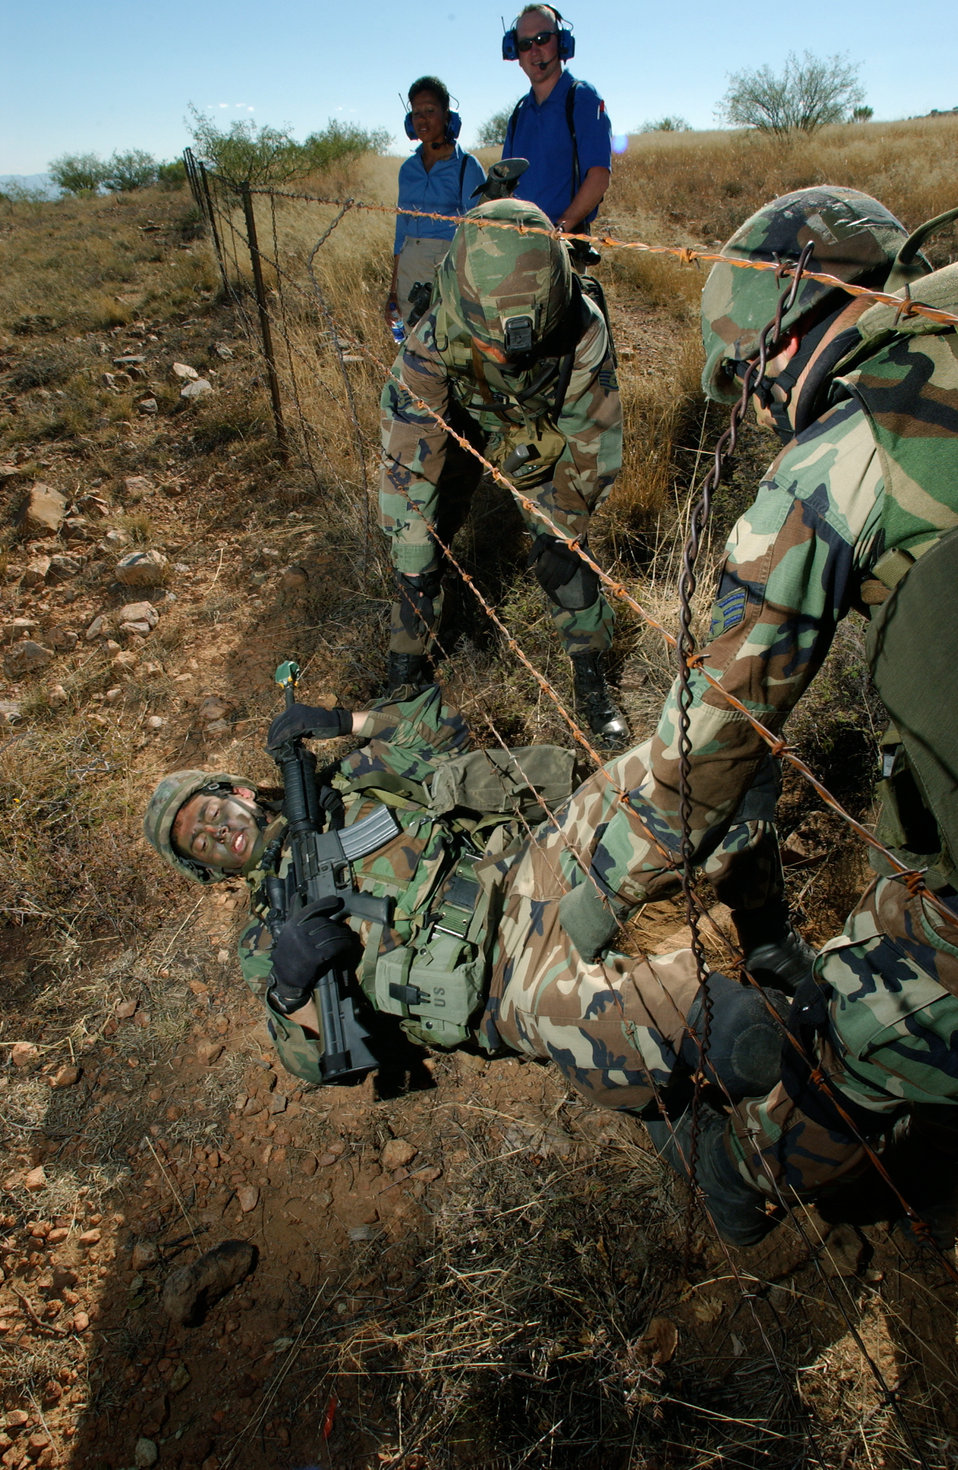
Under the wire

FORT HUACHUCA, Ariz. - Airman 1st Class Nathan Wyckoff traverses under a barbed wire fence during a reconnaissance mission Oct 13. Members of the U.S. Air Forces in Europe Defender Challenge team are spending three weeks here in preparation for the 2004 Defender Challenge competition. Defender Challenge held at Lackland Air Force Base, Texas, is a security forces competition pitting competitors from major commands against one another over a series of events. Airman Wyckoff is assigned to the 85th Security Forces Squadron, Keflavik Air Base, Iceland.